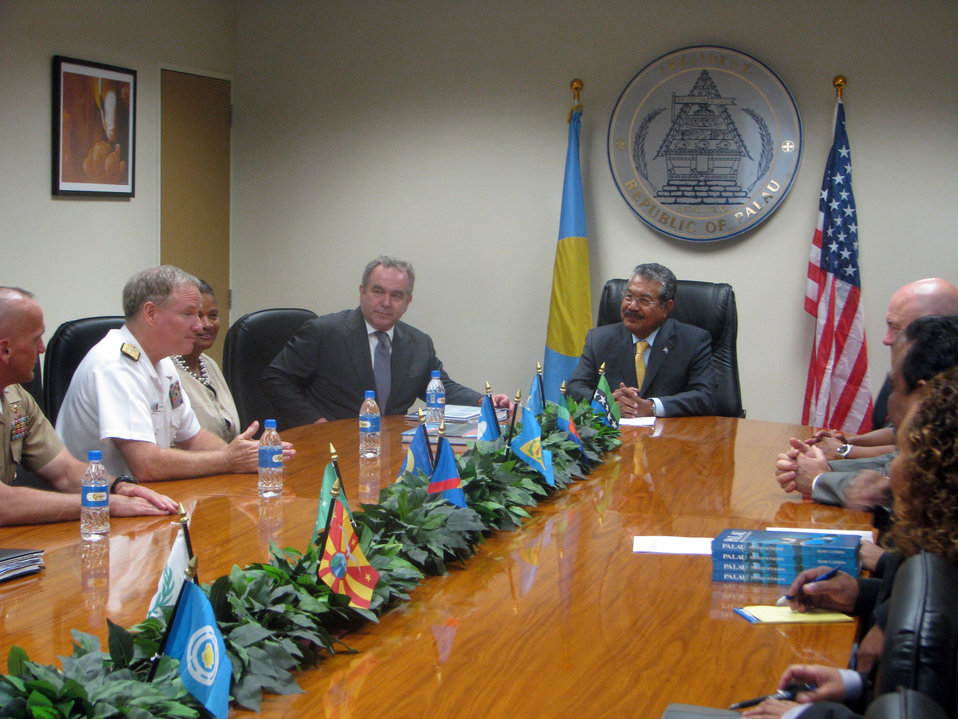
Adm. Walsh Addresses Palau President Toribiong

Adm. Patrick Walsh, commander of U.S. Pacific Fleet, left; addresses President Johnson Toribiong of Palau, right center, during his meeting with Assistant Secretary of State for East Asian and Pacific Affairs Kurt Campbell, left center, and a delegation he is leading in Ngerulmud, Palau, on June 30, 2011. The delegation also includes Office of the Secretary of Defense South/Southeast Asia Principal Director, Marine Corps Brig. Gen. Richard Simcock, and U.S. Agency for International Development (USAID) Assistant Administrator Nisha Biswal, who are visiting nations throughout the South Pacific to enhance bilateral political, economic and security relations in the region.